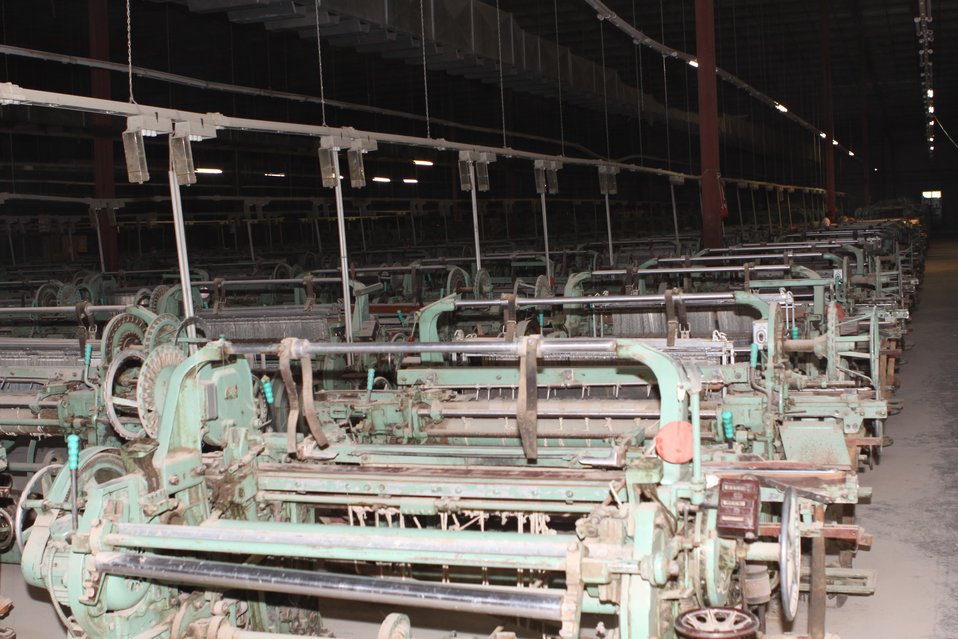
100525 Hirat Textile Company 735